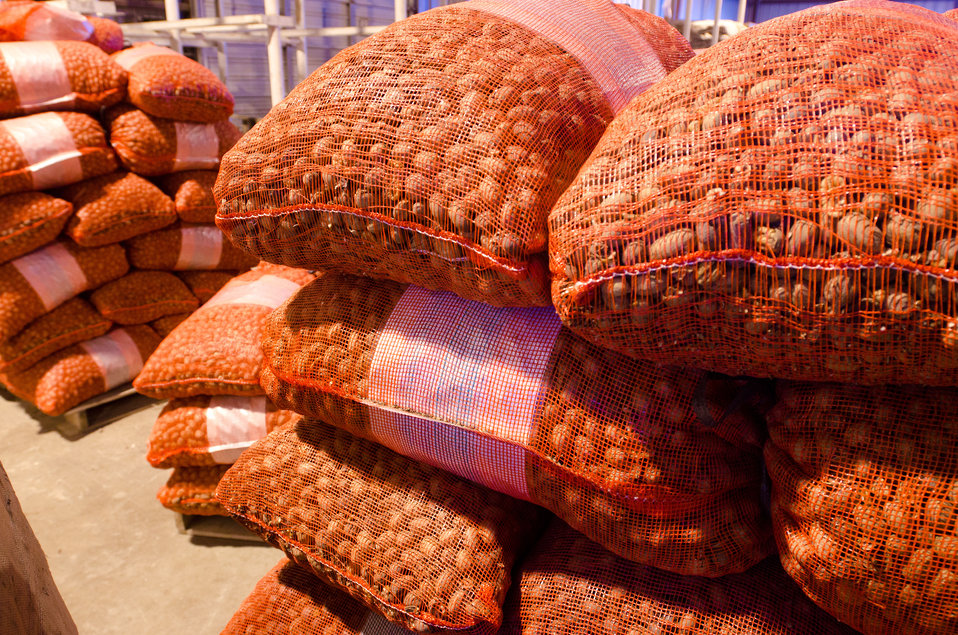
Five and 50 pound bags of pecans produced at Arrowhead Farms of Crystal City, TX, on Friday, December 9, 2011, owned by Mr. Akram Mohammad, a pecan farmer since 2005. The 719 acre farm with 10,000 trees, features some orchards with underground micro irrigation system that feeds water to the roots of 4,380 pecan trees on 146 acres. Mr. Mohammad said, “USDA (U.S. Department of Agriculture) was essential to my business and trees surviving the recent exceptional drought. The trees were stress free thanks to underground micro-irrigation. This is essential to the future growth of Texas agriculture and good for America.” U.S. Department of Agriculture’s (USDA) Environmental Quality Initiative Program (EQIP) awarded Mr. Mohammad a $130,000 grant in 2008. He provided $26,000 for the balance of the $156,000 total cost to install a 146-acre underground micro-irrigation for 4,380 trees.